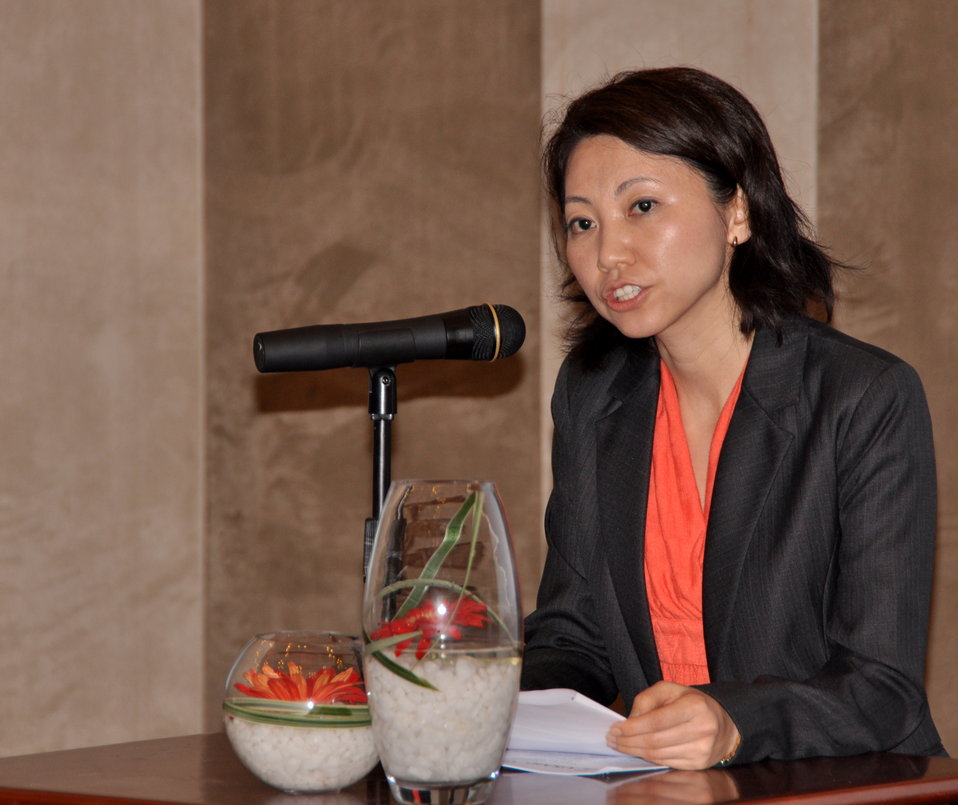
USAID General Development Office Director, KC Choe, Addresses the Danang Stakeholder Meeting

Environmental Remediation of Dioxin Contamination at Danang Airport

Danang, Vietnam
January 23, 2013
Photos @USAIDVietnam